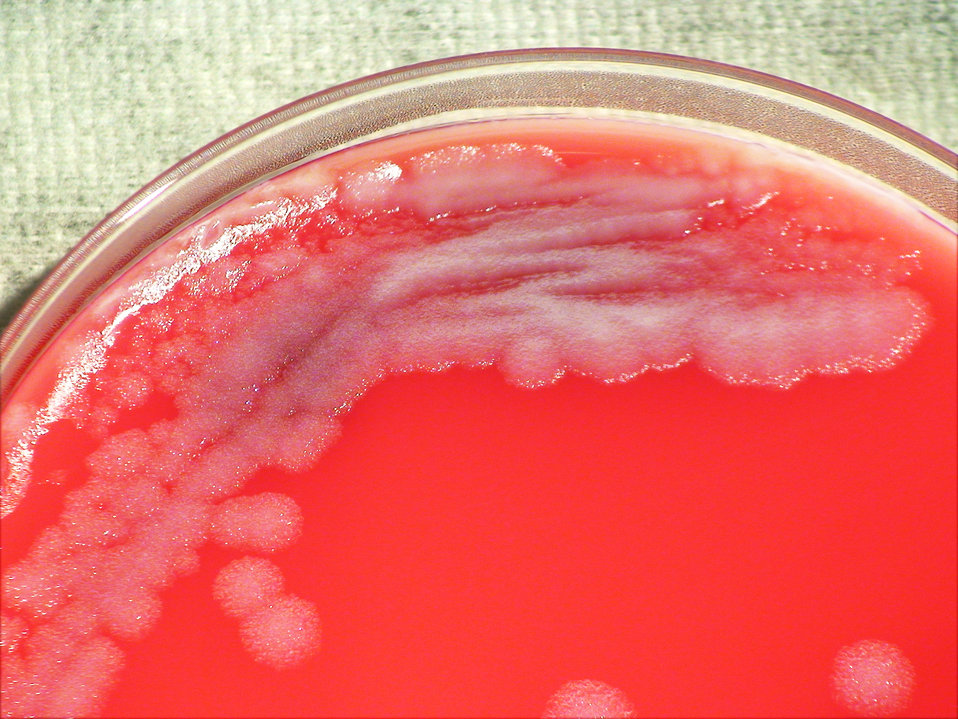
A closer view of PHIL 12392, this photograph depicts the colonial morphology displayed by Gram-positive, Pasteur strain, Bacillus anthracis bacteria, which was grown on a medium of phenylethyl alcohol agar (PEA), for a 24 hour time period, at a temperature of 37�C.